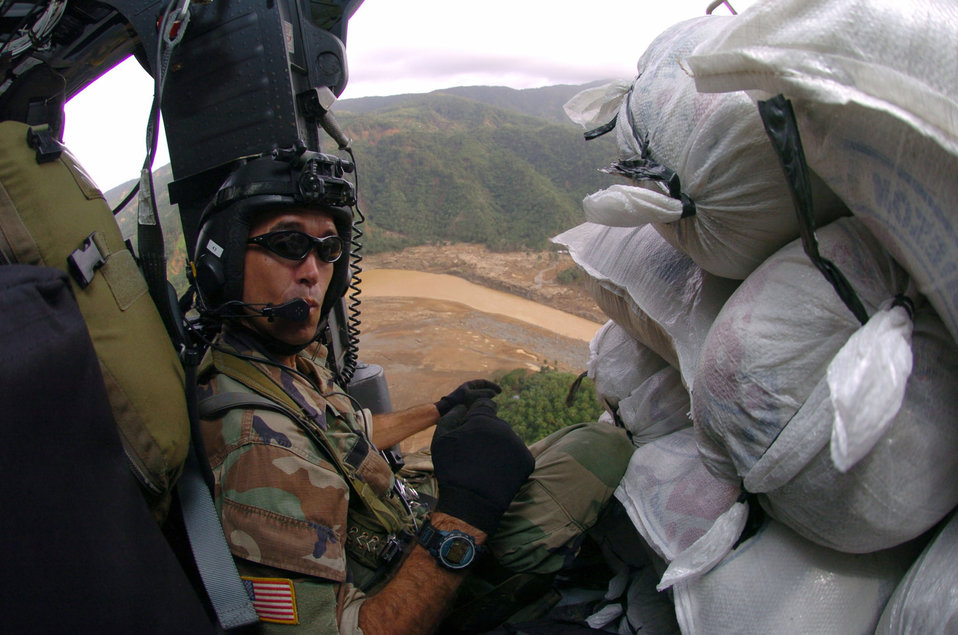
Kadena Airmen aid Philippine typhoon victims

OVER QUEZON PROVINCE, Philippines -- Tech. Sgt. Don Currier delivers sacks of supplies aboard an HH-60 Pave Hawk helicopter to Real City, Philippines, during typhoon relief operations. About 600 U.S. servicemembers are providing humanitarian assistance and disaster relief to residents of Quezon Province where widespread flooding displaced about 168,000 people and left more than 1,400 dead or missing. Air Force and Marine helicopters are flying daily missions to the stricken areas. Sergeant Currier is a pararescueman from the 33rd Rescue Squadron at Kadena Air Base, Japan.